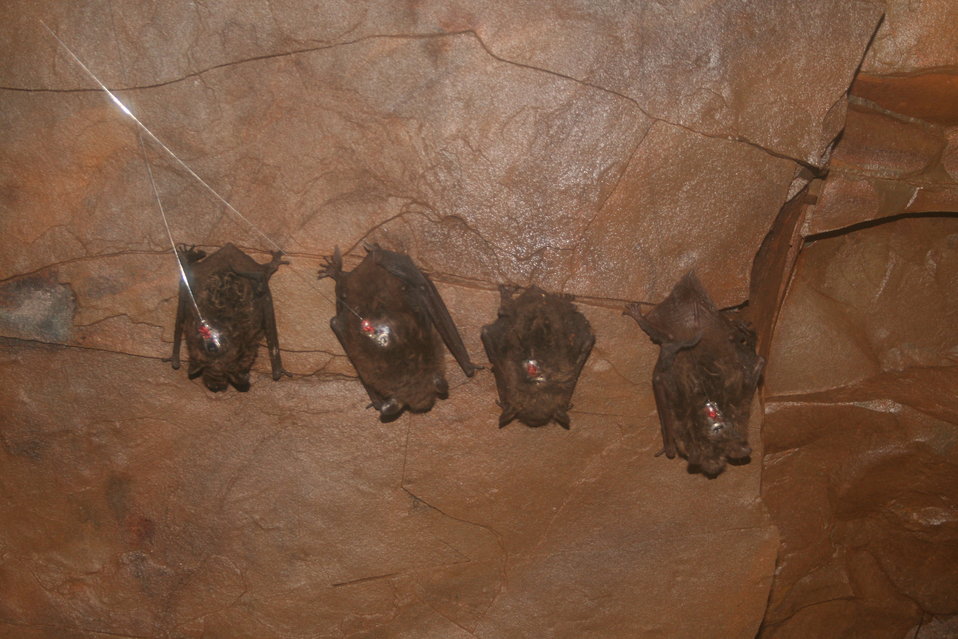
Bats with temperature-sensitive radio transmitters, Shindle Iron Mine, Pennsylvania

Credit: Greg Turner, Pennsylvania Game Commission

Image size: 2336p (32 in.) W x3504p (49 in.) H, 72 ppi, 5.2 MB